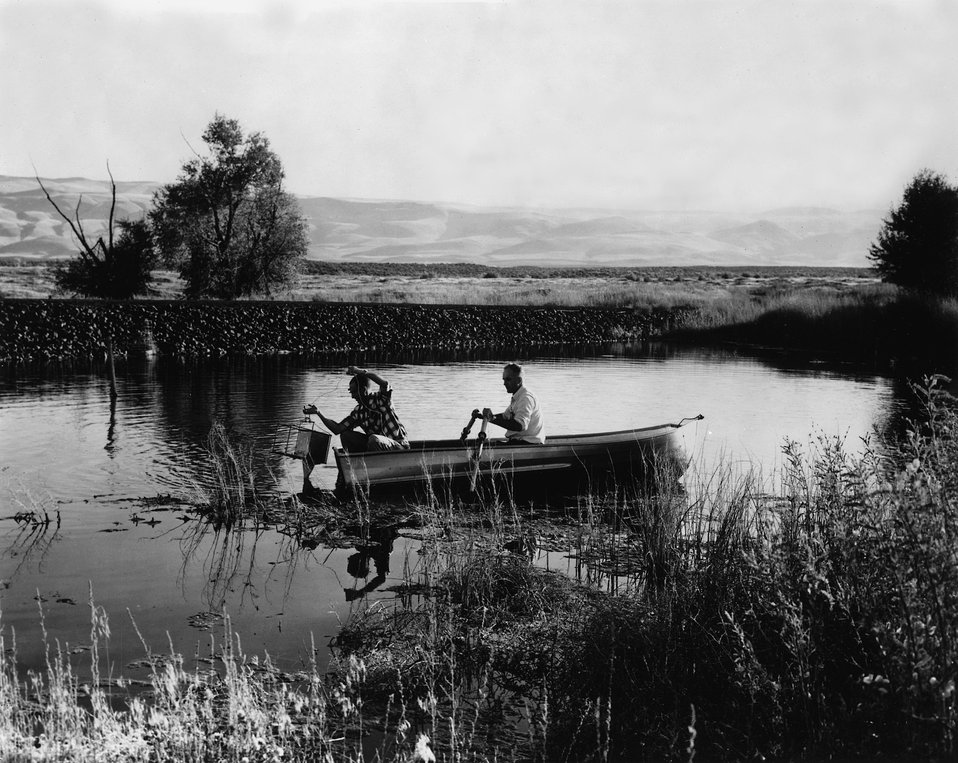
Biologists sample plankton in a reservoir on an arid lands ecology reserve to learn more about the relationship between plant and animal communities living in a natural state. c. 1970